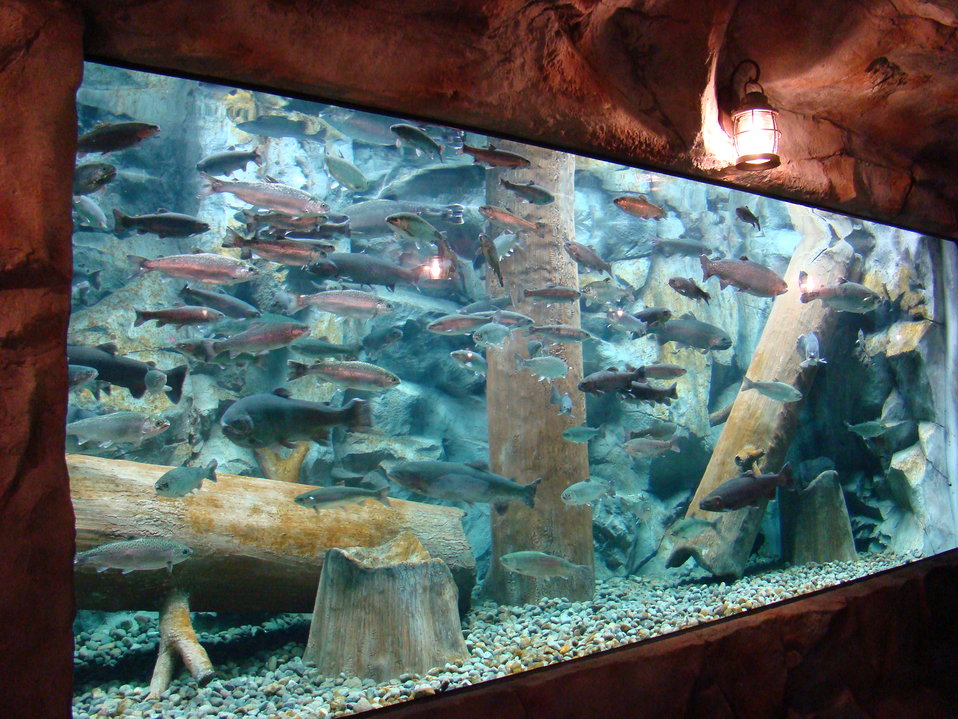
Aquarium at Cabela's store